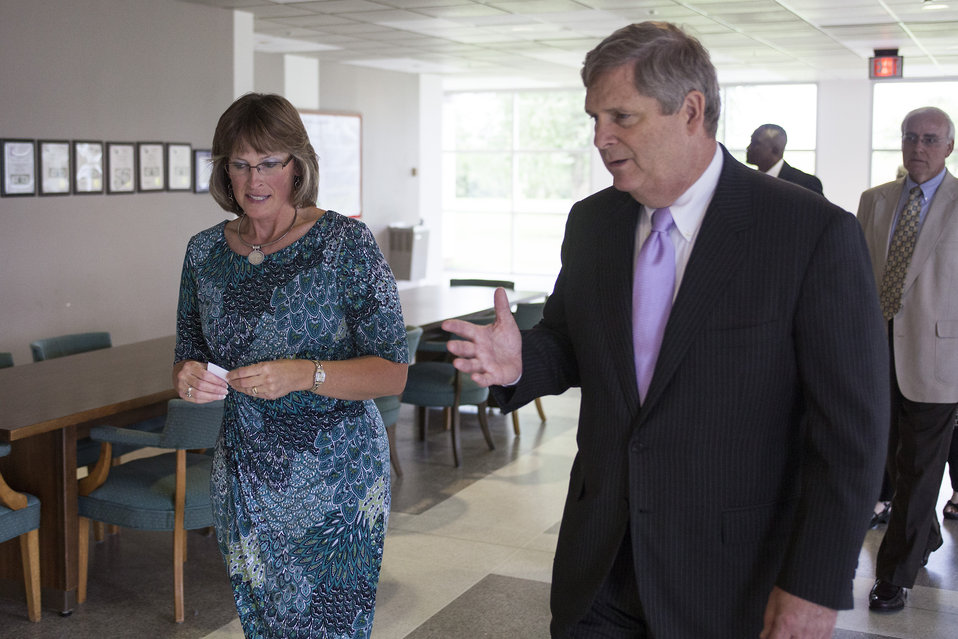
Agriculture Secretary Tom Vilsack tours the school facilities at Northeast Regional School of Biotechnology and Agriscience in Plymouth, NC on Friday, Aug. 15, 2013.